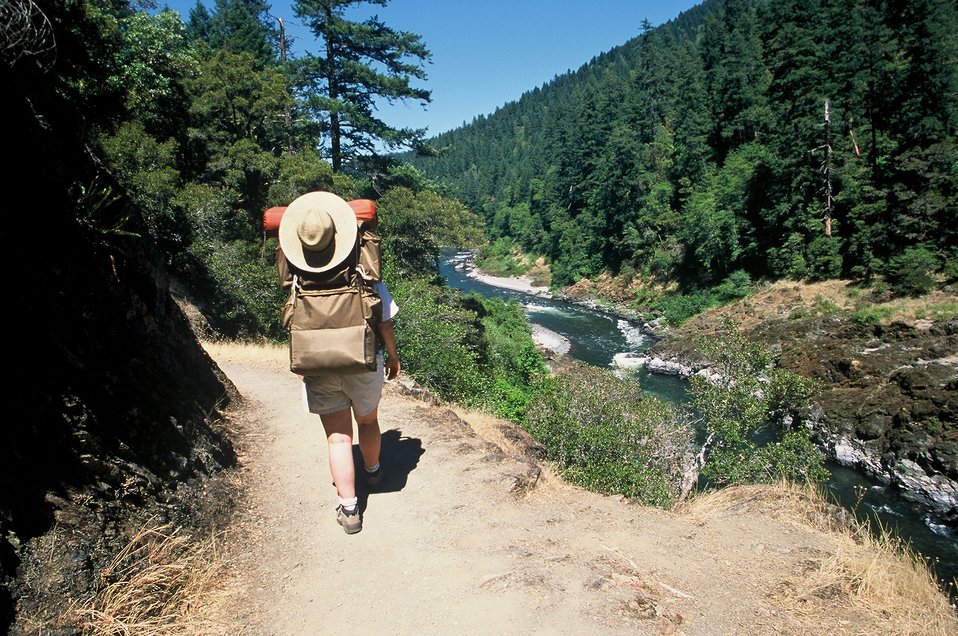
Hikers on trail between Mule Creek and Blossom. Looking up river.